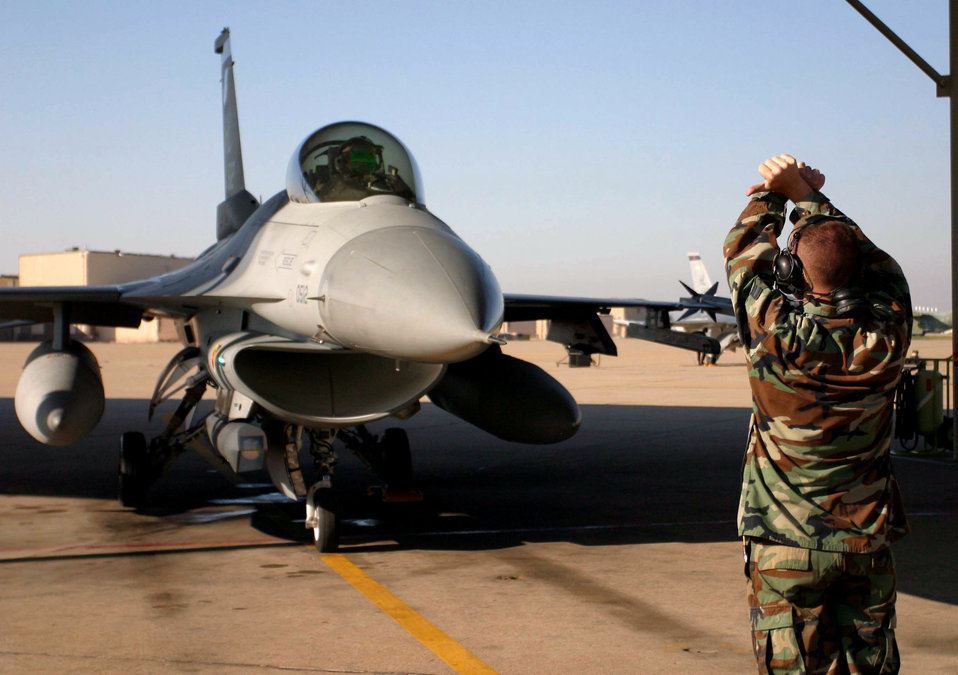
Crew chief meets childhood hero at Hill

Airman 1st Class Jeremy Meyers, 34th Fighter Squadron crew chief, prepares Lt. Col. Kurt Gallegos, 419th Fighter Wing pilot, for flight. Reserve pilots and maintainers from the 419th FW now work alongside active-duty Airmen from the 388th Fighter Wing as part of the Air Force's Total Force Integration initiative aimed at increasing combat capabilities and efficiencies among like units.